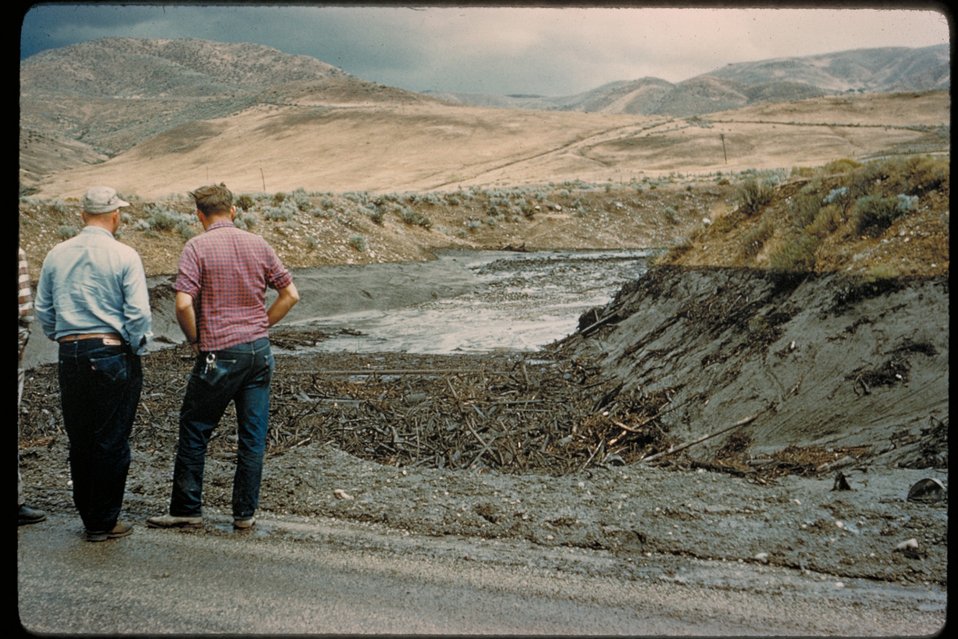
Fire Rehab Boise Front Four Rivers Field Office LSRD Lower Snake River District